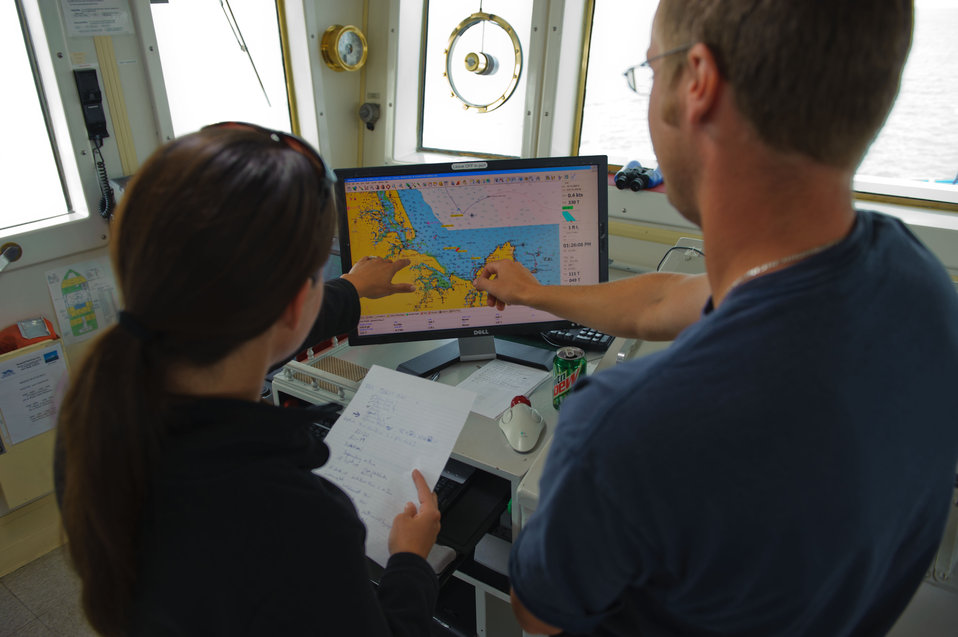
August 6, 2011 What's our ETA to the next station?

EPA scientist Regina Lyons gathers the estimated arrival time to the next station with Second Mate Steve Roy.